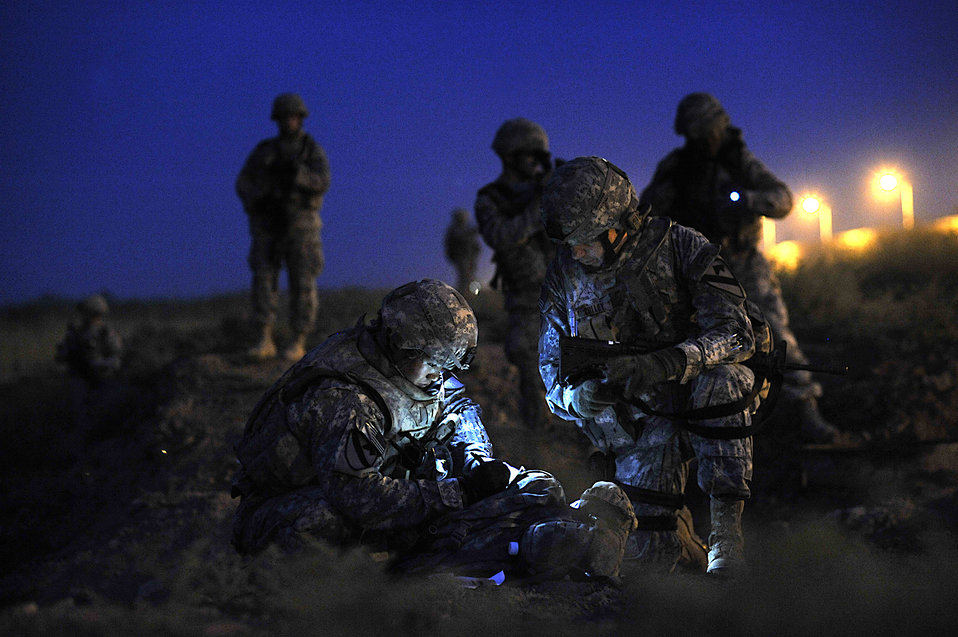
Joint patrol provides Airmen with valuable knowledge

Second Lt. Chang Ahn and Major David McCulley update perimeter maps to increase base security during Operation Lewis and Clark Sept. 11 at Joint Base Balad, Iraq. Operation Lewis and Clark was a joint patrol in which Air Force security forces Airmen were introduced to Balad's outer perimeter. Since Americans began operating from Balad in 2003, the Army has been responsible for base security. The 332nd Expeditionary Security Forces Ground will soon be the largest security forces unit deployed in combat to defend an airbase since Vietnam. Lieutenant Ahn is a 5th Battalion 82nd Field Artillery 2nd Platoon leader. Major McCulley is a 5th Battalion 82nd Field Artillery Battalion operations officer.